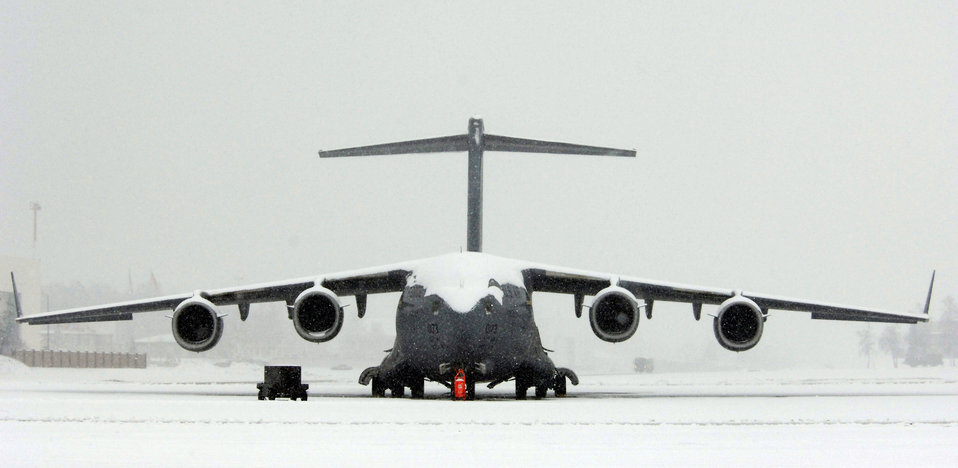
Snow-covered C-17s

Several days of storms left 6 inches of snow covering C-17 Globemaster IIIs at Ramstein Air Base, Germany, on Friday, March 3, 2006.